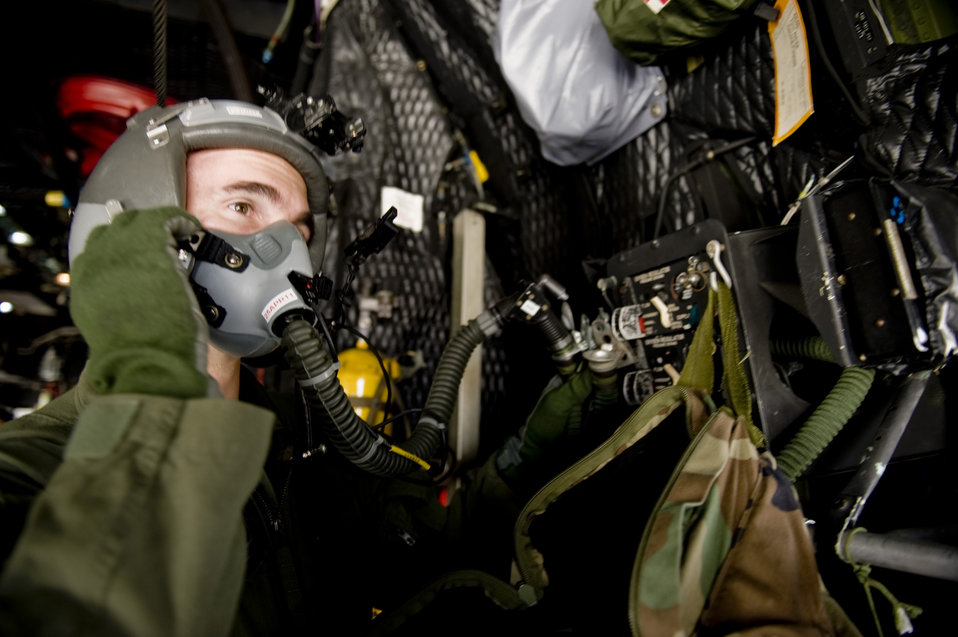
Standing up at Sendai airport

Master Sgt. Mike Milich tests emergency oxygen systems on board an MC-130P Combat Shadow March 16, 2011, at Yokota Air Base, Japan, prior to flying supplies to Sendai airport.The crew brought water, food, fuel and other general supplies to 353rd Special Operations Group members who are conducting search and rescue missions from the airport. The Airmen are establishing a usable runway at Sendai Airport to help with Japan's earthquake and tsunami relief. Sergeant Milich is assigned to the 17th Special Operations Squadron.